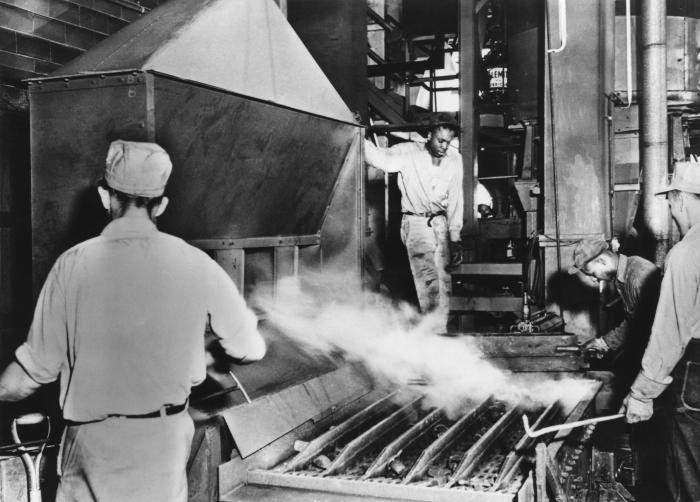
This historical photograph, provided by the Center for Disease Control's (CDC), National Institute for Occupational Safety and Health (NIOSH), depicted a number of foundry workers using a shake-out table during an unidentified manufacturing process. Note how the expelled gasses are drawn off, and up into the suctioned air current of a rear-situated ventilation unit. It was not known whether of not the fumes were toxic, but note that none of the workers were wearing filtered breathing masks, or protective goggles.